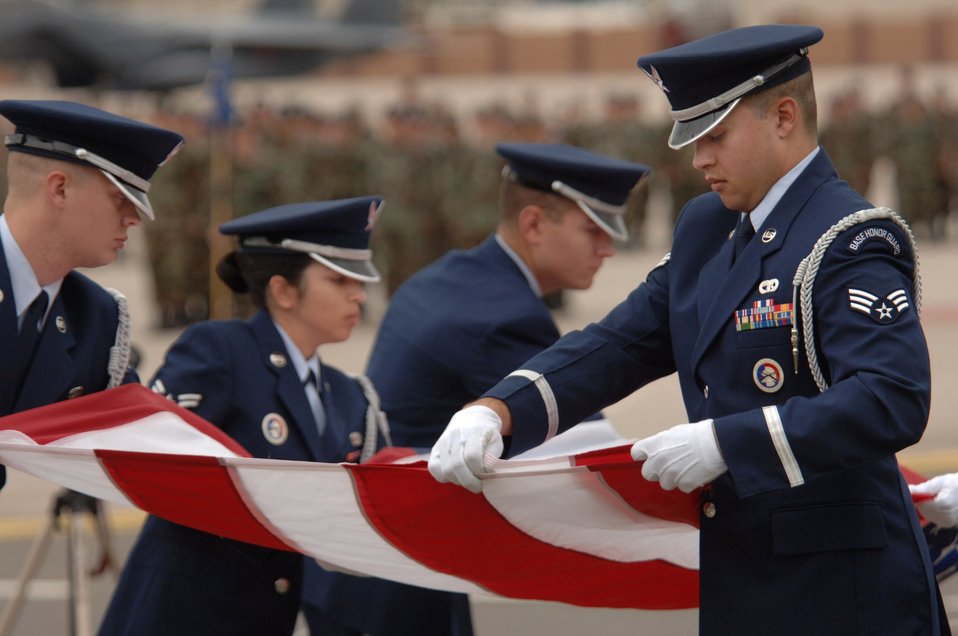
Ramstein Airmen observe Sept. 11

The honor guard from Ramstein Air Base, Germany, performs a flag detail during the Sept. 11 memorial ceremony at Ramstein Air Base, Germany. More than 500 Airmen attended the ceremony which marked the sixth anniversary of the terrorist attack of Sept. 11, 2001.